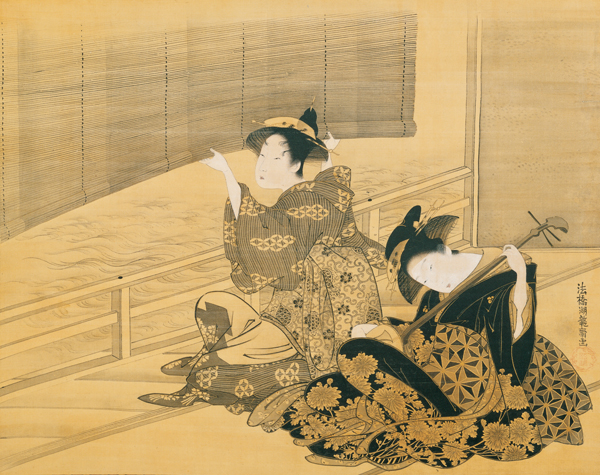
'Courtesan Playing the Samisen' by Isoda Koryusai, c. 1785